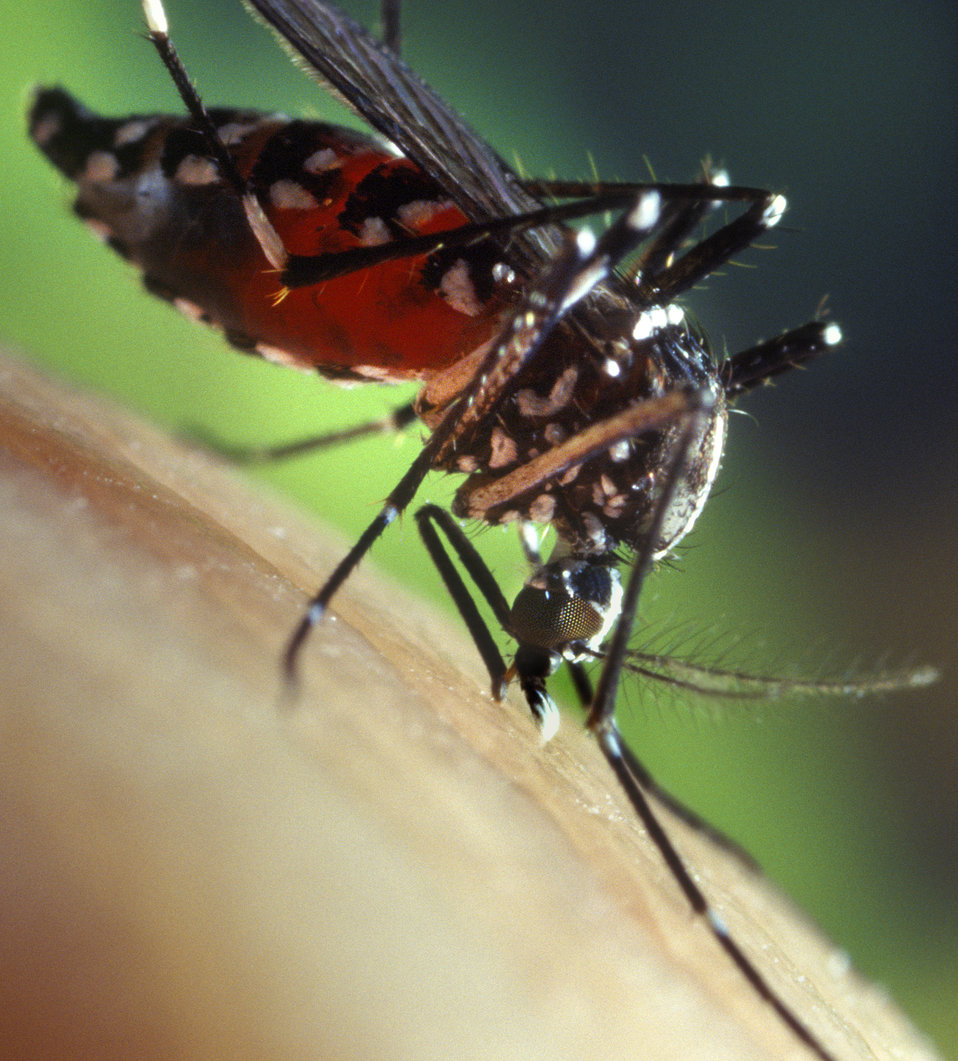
A blood-engorged female Aedes albopictus mosquito feeding on a human host.